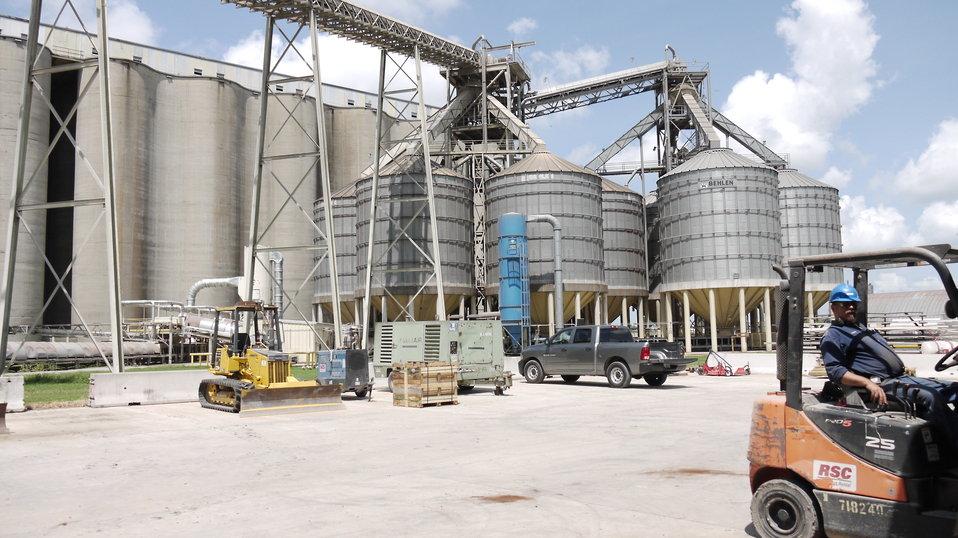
U.S. Department of Agriculture’s (USDA) Grain Inspection, Packers, and Stockyard Administration (GIPSA) goes to a grain elevator in Myrtle Grove, LA on Aug. 6, 2013 to calibrate weights. USDA GIPSA provides official testing of Automatic Bulk Weighing (Hopper) scales used in official certification of grain weight.